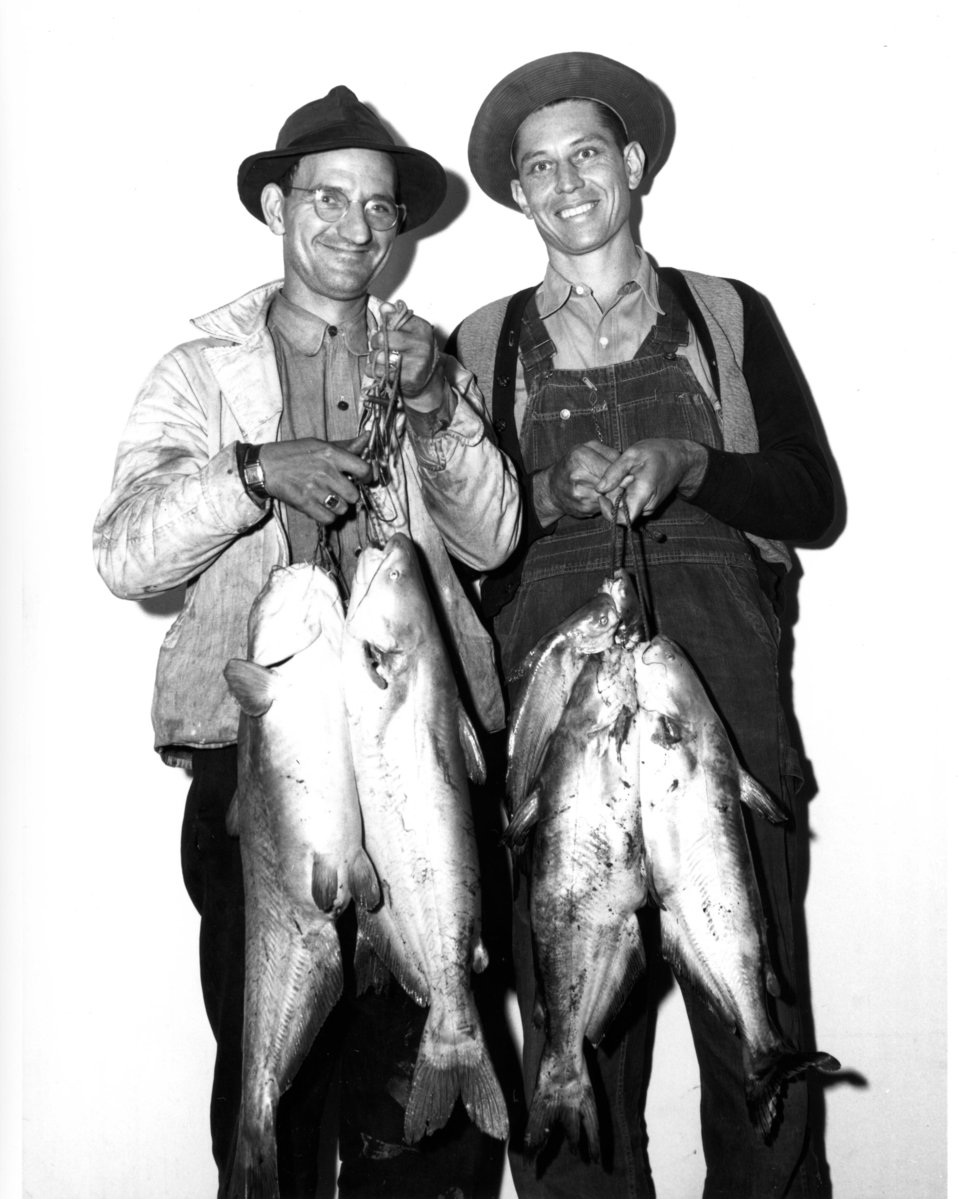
Recreation at Oak Ridge